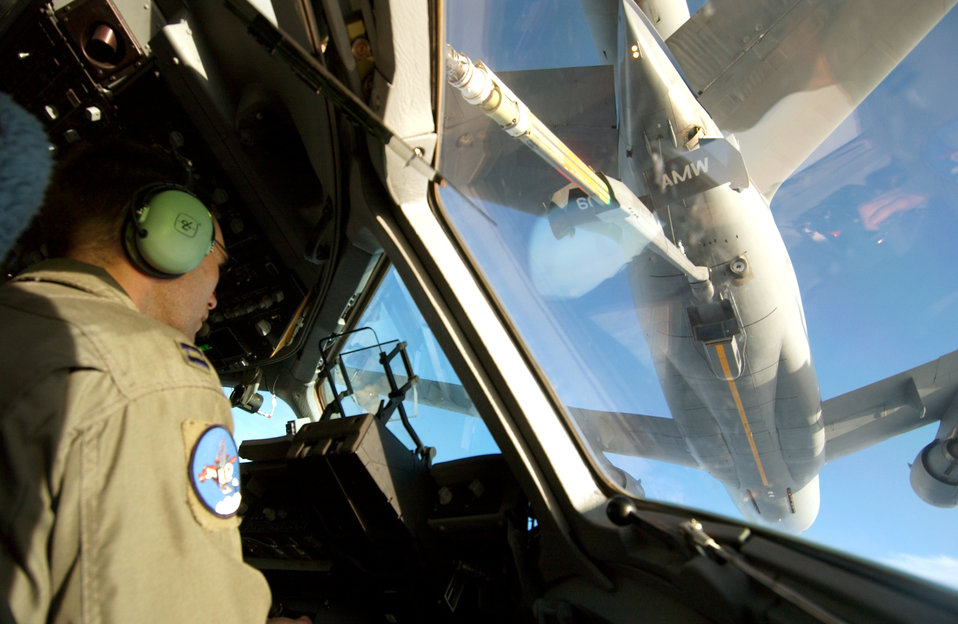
C-17s cross globe to assist international exercise

OVER AUSTRALIA -- Capt. Douglas Snead flies a C-17 Globemaster III toward a KC-10 Extender for aerial refueling June 17 before an airdrop mission supporting Talisman Saber 2005. Captain Snead is assigned to 8th Airlift Squadron at McChord Air Force Base, Wash.